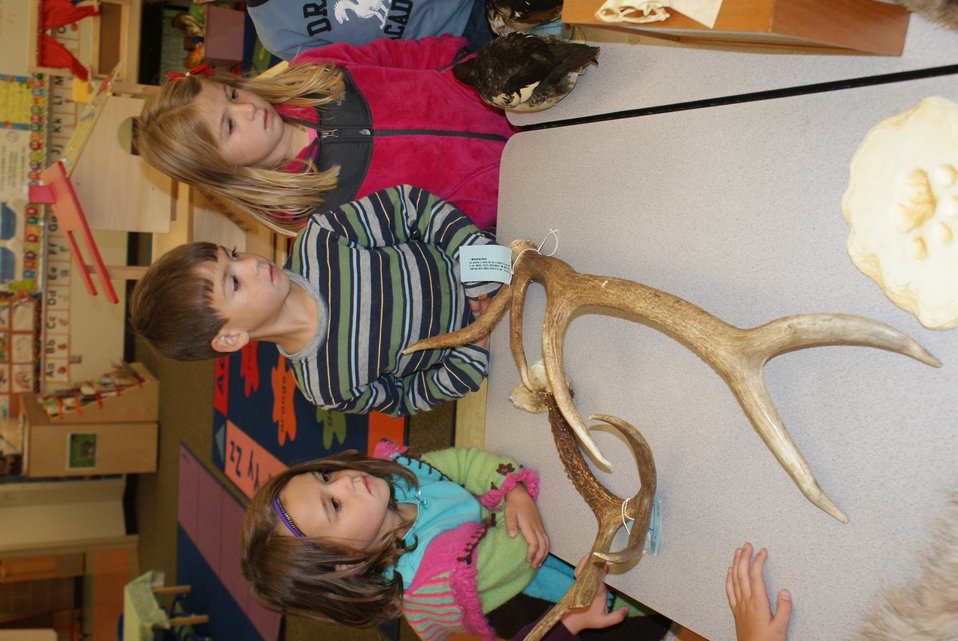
Scientists in the Community Program

U.S. Fish and Wildlife Service Mountain-Prairie Region Deputy ARD for External Affairs, Matt Kales, introduces early childhood education students at William Roberts Elementary School in Denver to some of Colorado's native and historic wildlife species.